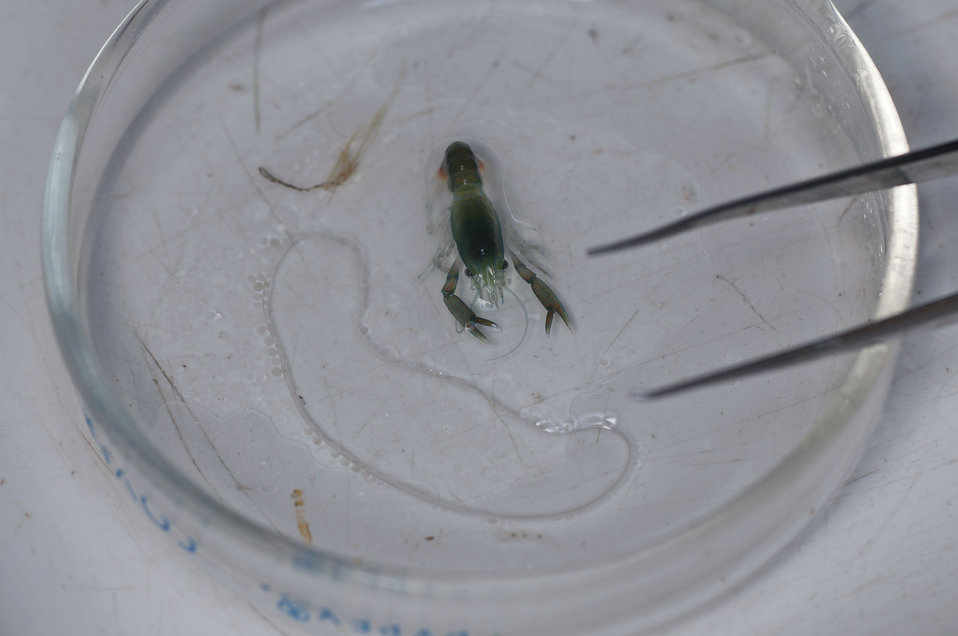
August 6, 2011 Another view of the little lobster